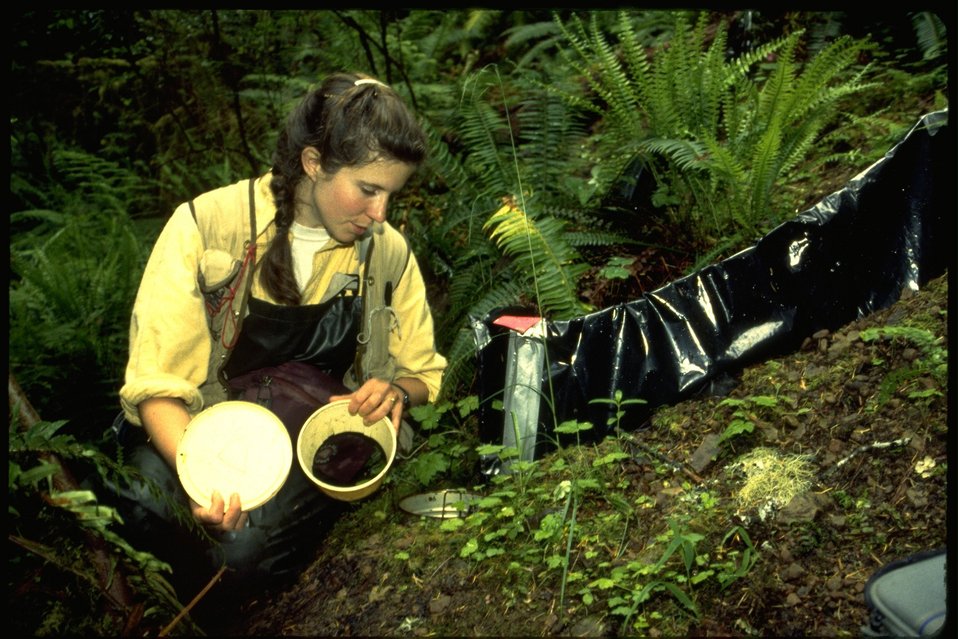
Field worker conducting an amphibian study.